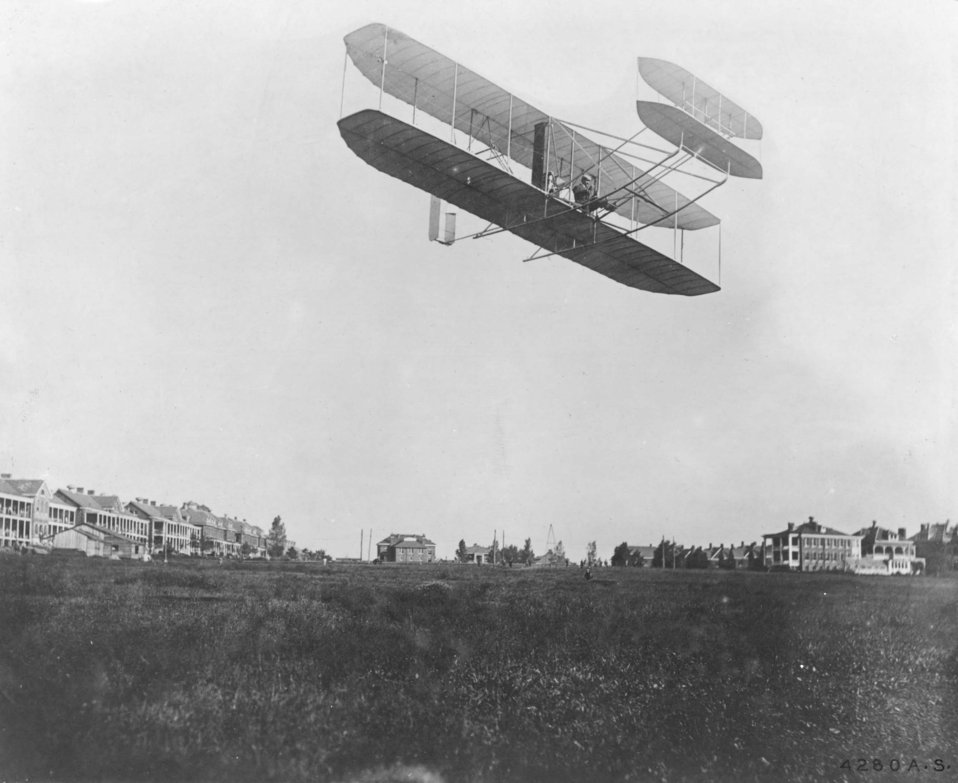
Wright Type A Airplane

EARLY YEARS -- Wright Type A Airplane - Orville Wright at Ft. Myer, Va. - Sept. 9, 1908